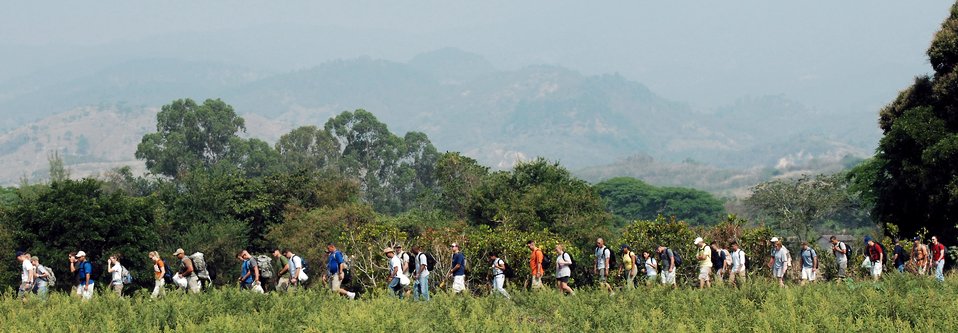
JTF-Bravo volunteers give needed food to local Hondurans

Joint Task Force-Bravo personnel hike through a field on their way to deliver food to a village near Humuya, Honduras, April 26 as part of the chapel hike program. About two and one half tons of staple food items were delivered to Honduran families in need.